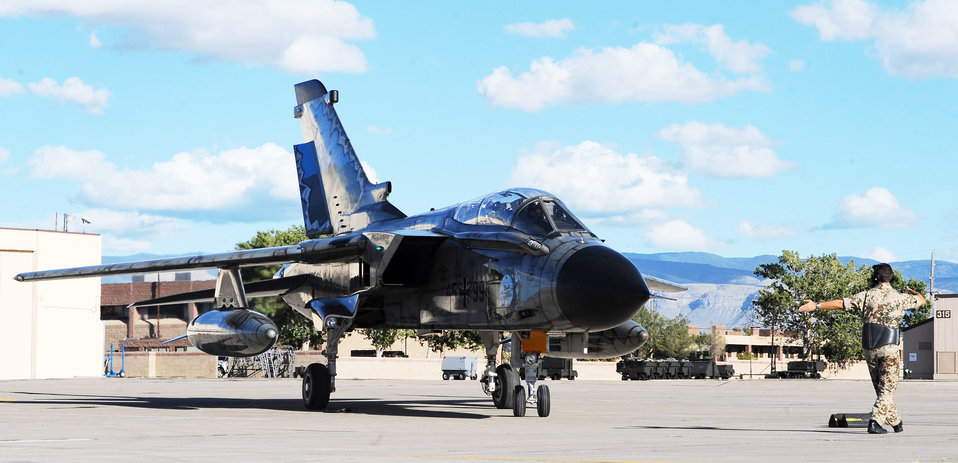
GAF FTC commemorates 55,555 flight hours

Col. Peter Klement, German air force Flying Training Center commander and Col. Jeff Harrigian, 49th Fighter Wing commander, taxi a German Tornado at Holloman Air Force Base, N.M. Oct. 13, 2009, after achieving the 55, 555 flight hour for FTC aircrews. Members of the German air force and the 49th FW gathered for a ceremony to commemorate the achievement.